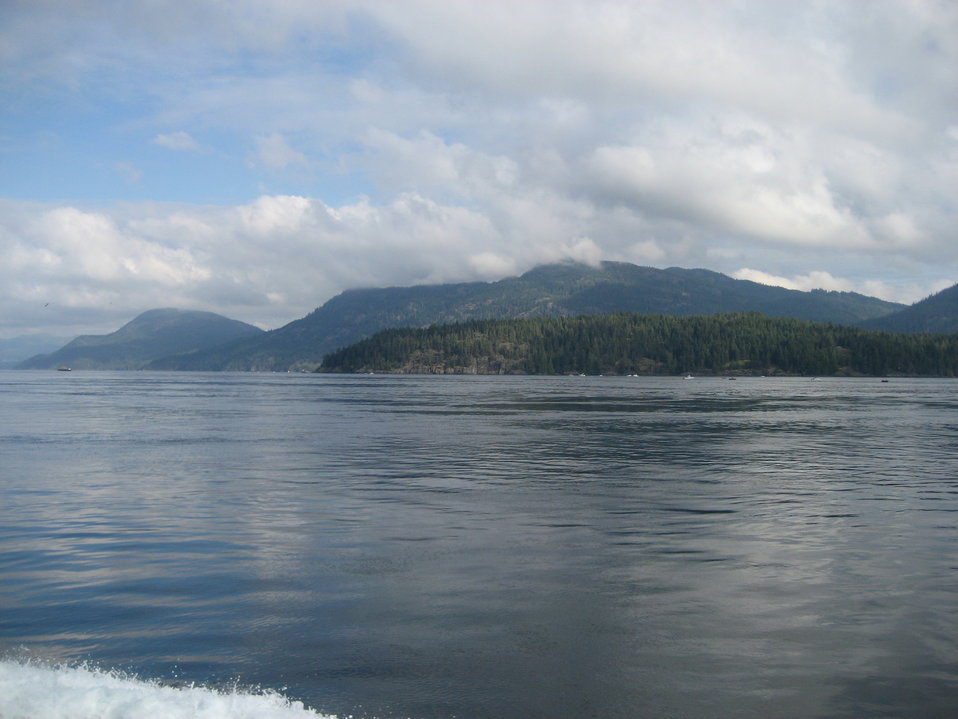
A scene along the Inside Passage.